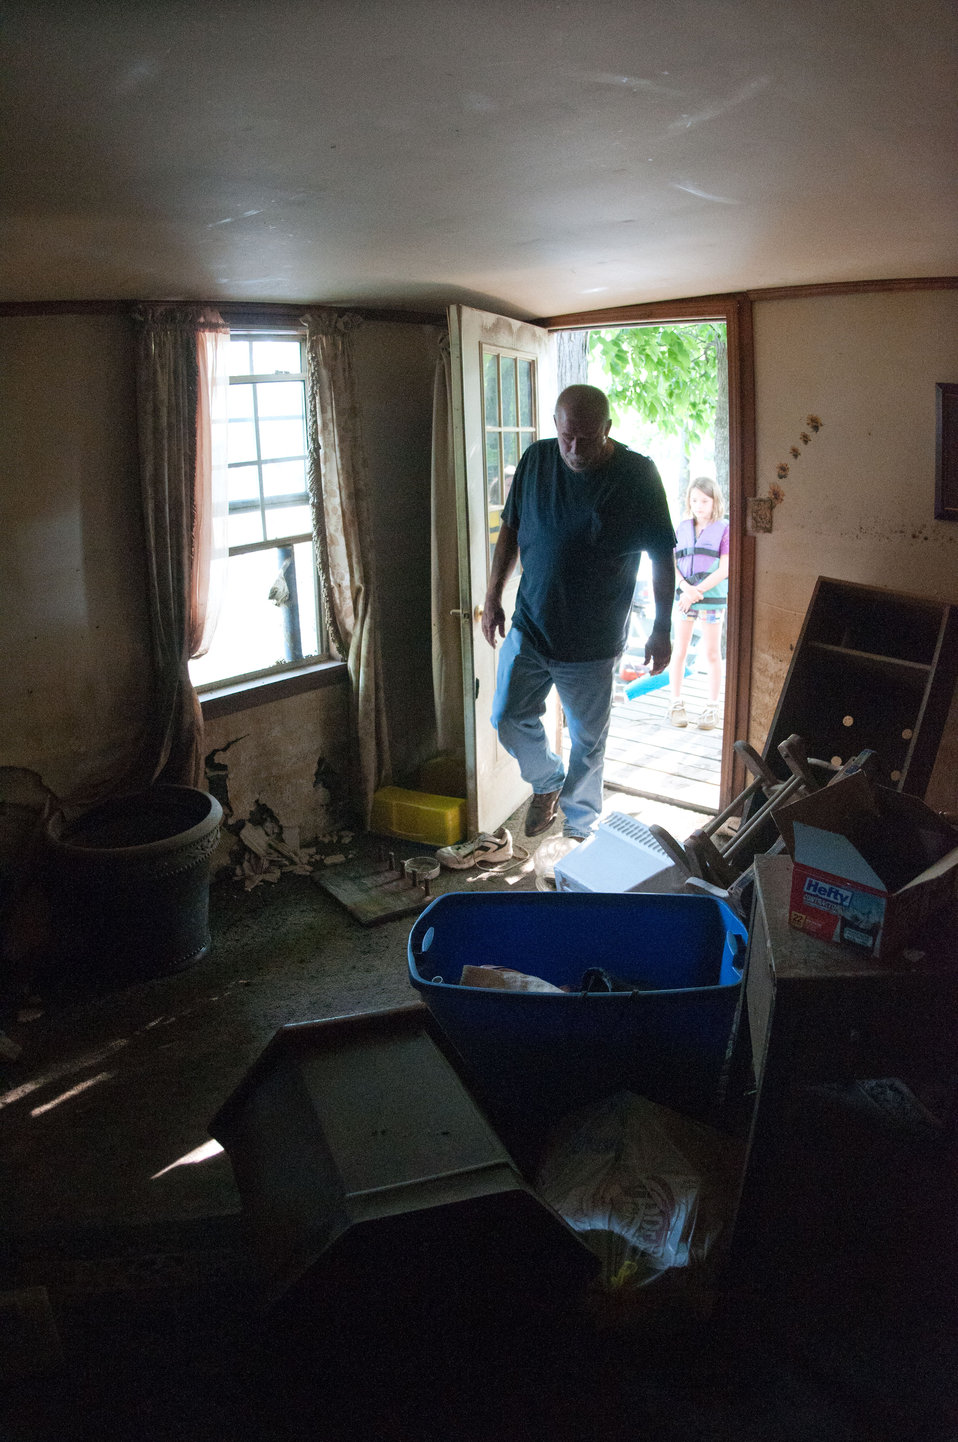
Lauderdale County, TN resident Robert Moffatt walks into a big muddy mess inside his home, near Open Lake on Saturday, May 21, 2011. The recently renovated living room was full of waist level water several days ago. The floor he stands on is almost 10 feet above the ground. Behind him his grand daughter Katlyn Moffatt looks in at the muddy soggy carpet that squishes under her grandfather's feet.